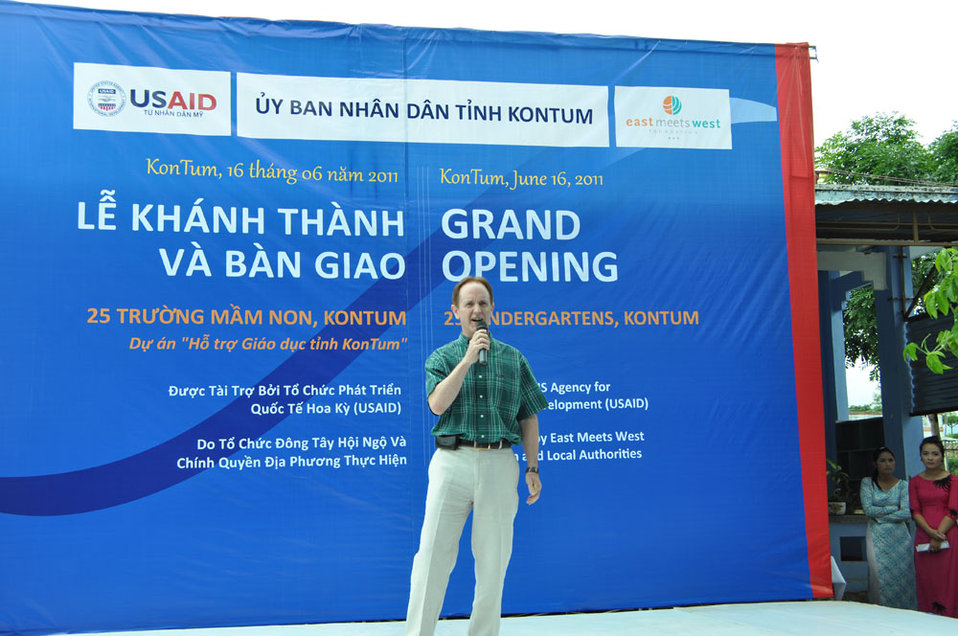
USAID Director Francis Donovan performs at the kindergarten handover program